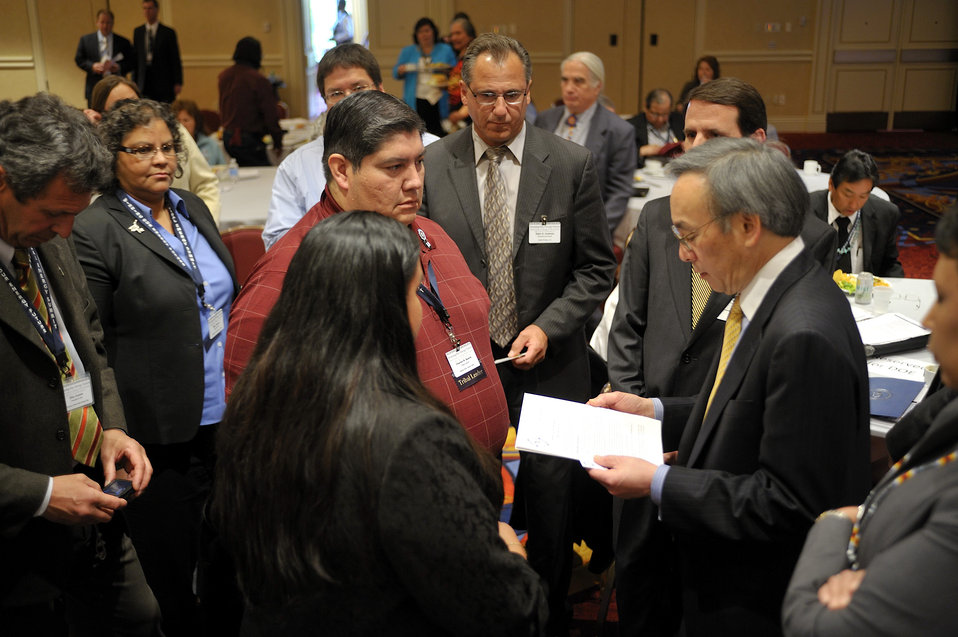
Tribal Energy Summit

Secretary Chu engages up close with Summit participants during the lunch period.